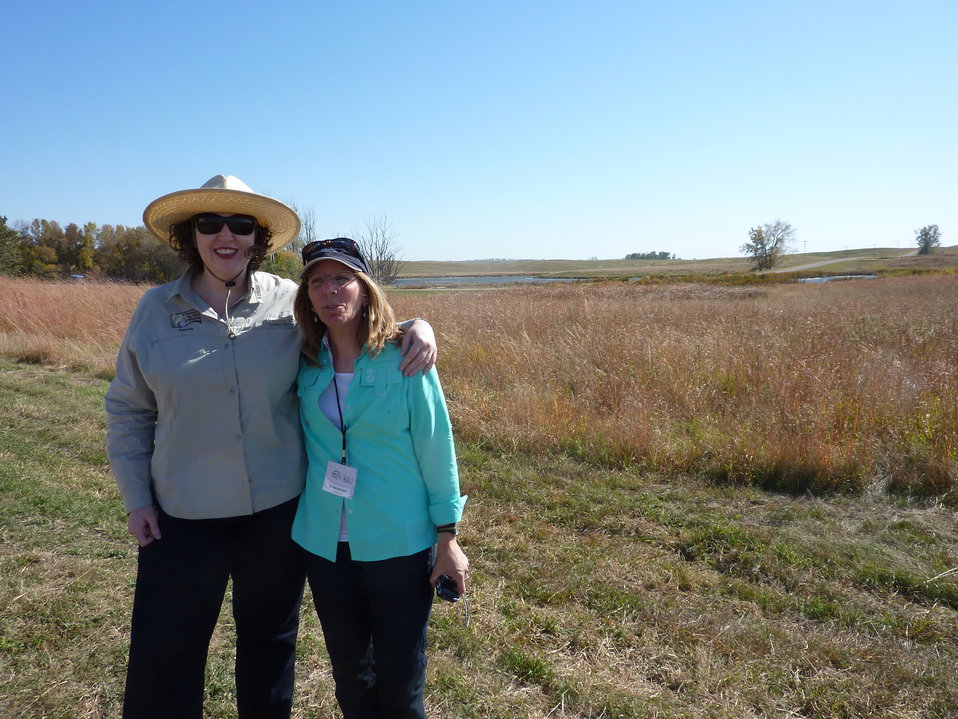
Private Lands Day 2011

South Dakota